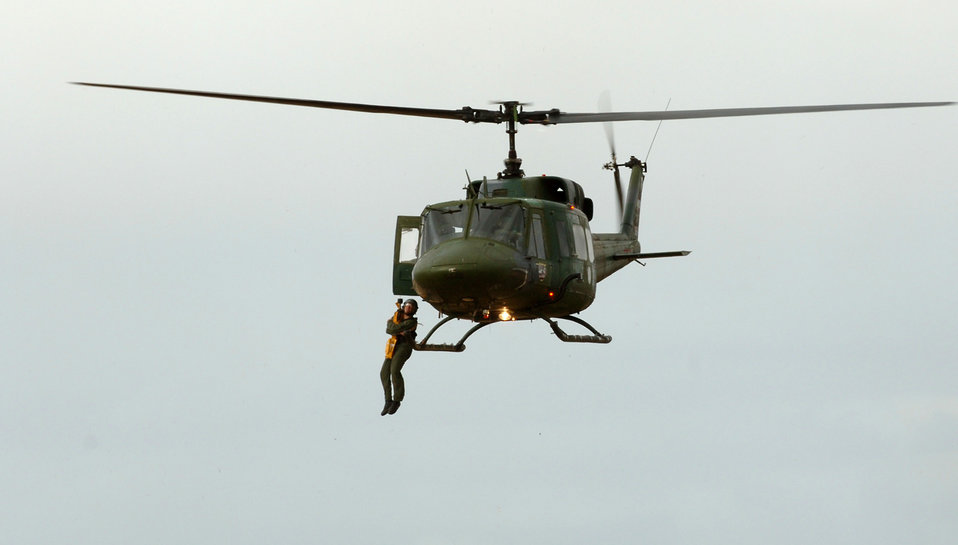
SERE specialists on target

Senior Airman Brian Daubert is hoisted into a helicopter during a combat search and rescue demonstration Sept. 18 at Fairchild Air Force Base, Wash. Weekly demonstrations give students a chance to see firsthand the techniques they've learned in the SERE classroom, such as using the parachute descent checklist. Airman Daubert is a survival, evasion, resistance and escape specialist here.